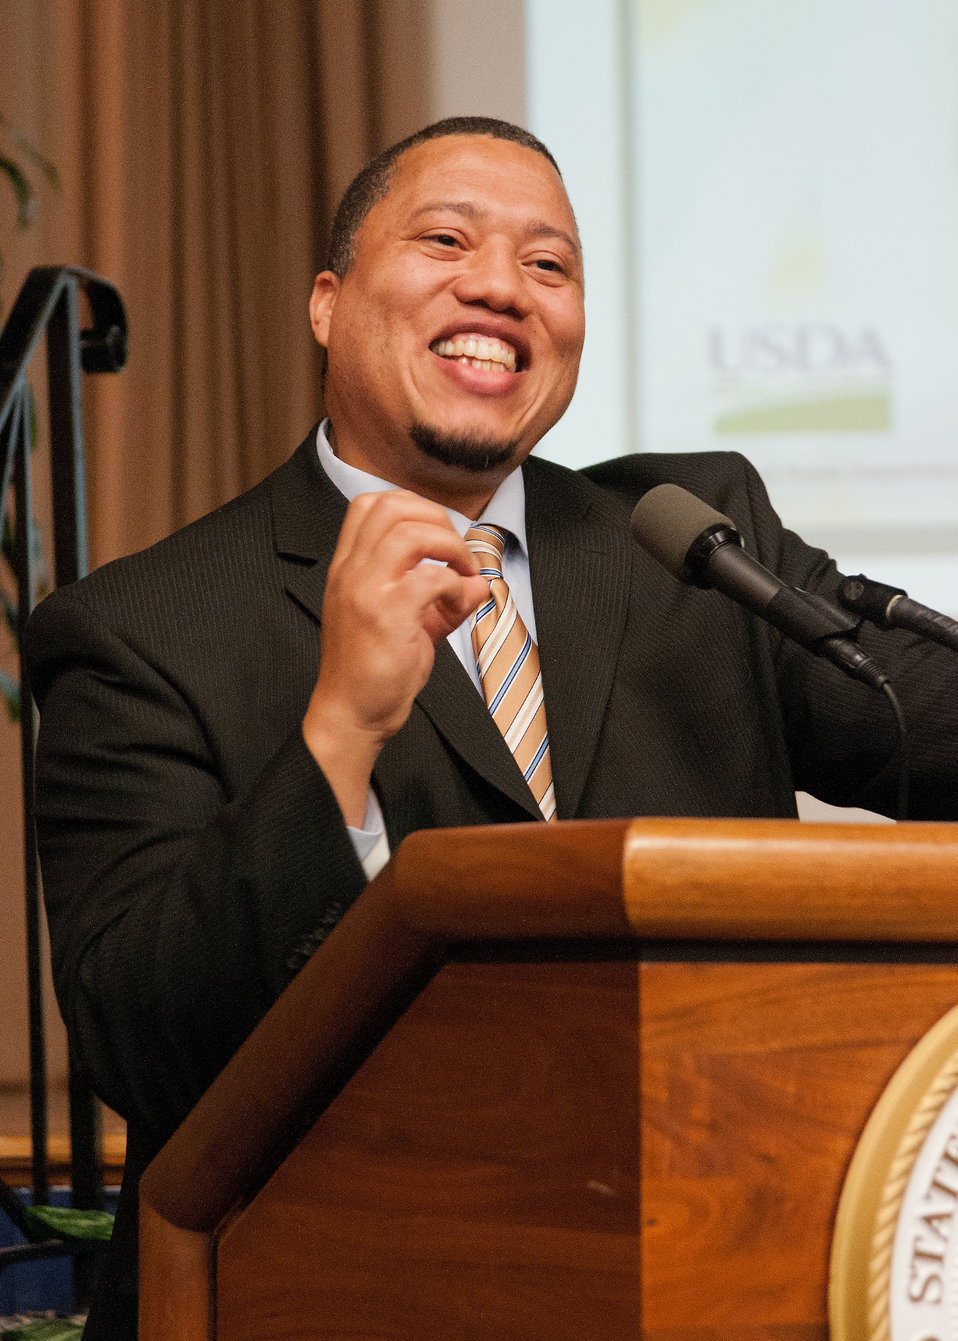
U.S. Equal Employment Opportunity Commission (EEOC) Office of Federal Operations Federal Sector Programs Directo Dexter Brooks speaks EEOC Government Wide Initiatives at the First Annual All Hands Special Emphasis Program Managers (SEPM) Meeting at the U.S. Department of Agriculture Jefferson Auditorium in Washington, D.C. on Wednesday, Mar. 13, 2013.